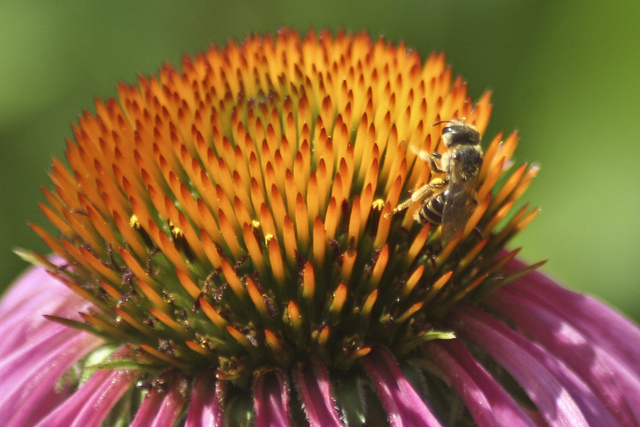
honeybee on purple coneflower